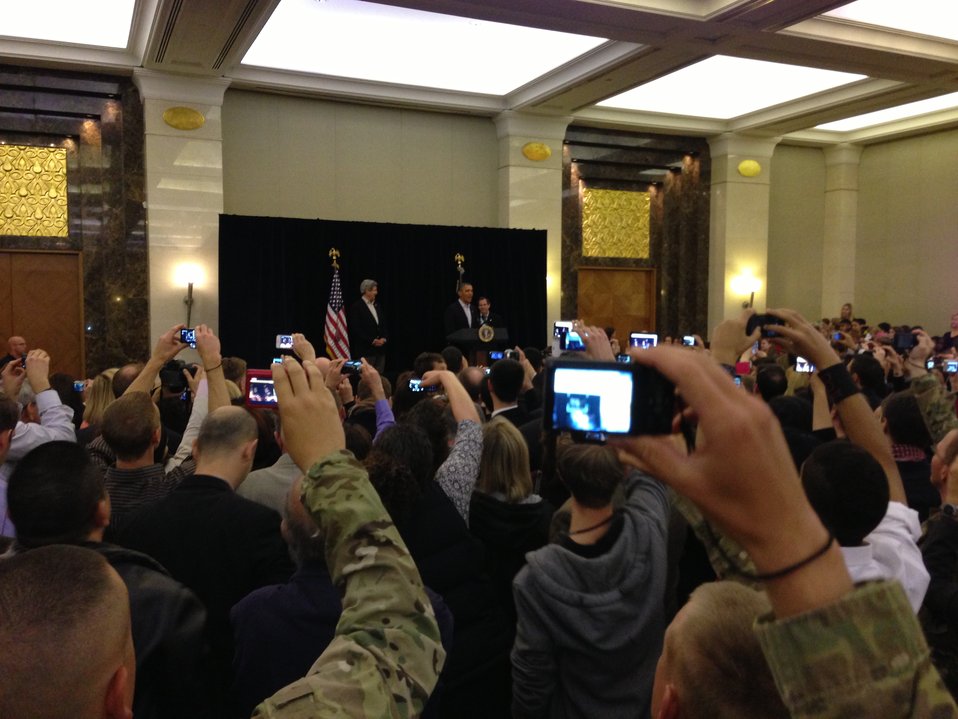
President Obama and Secretary Kerry Meet and Greet Embassy Amman Employees and Their Families

The crowd uses cell phones and cameras to record President Barack Obama's remarks to U.S. Embassy Amman employees and their families on March 23, 2013 as U.S. Secretary of State John Kerry and U.S. Ambassador to Jordan Stuart Jones look on.